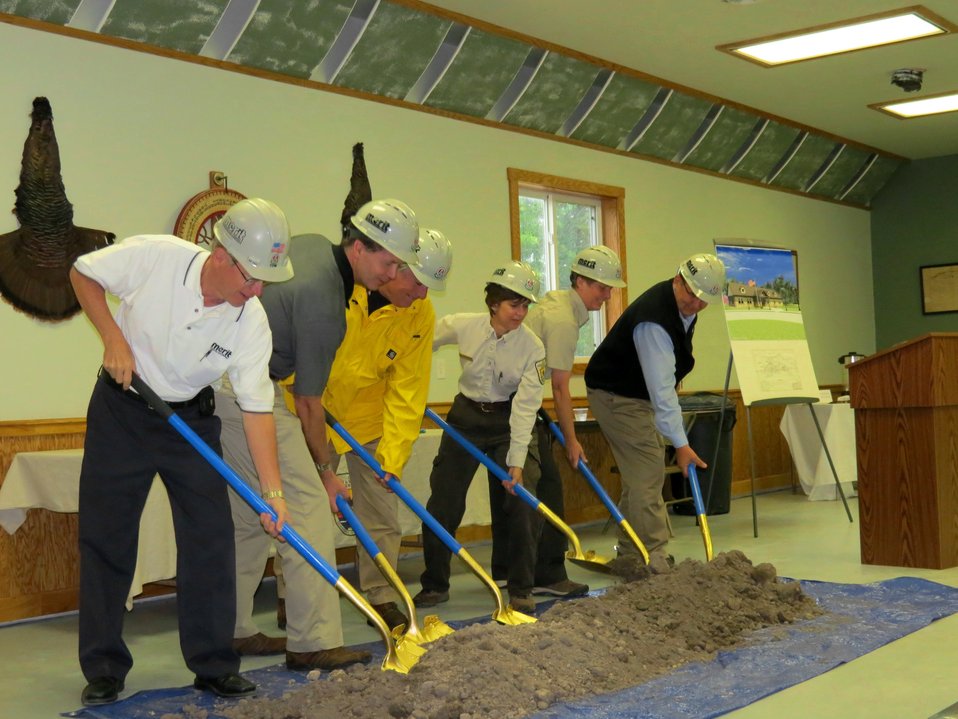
Moving Dirt

Midwest Region Chief of Refuges Rick Schultz, Refuge Manager Cathy Henry, refuge staff, Friends of Port Louisa NWR and contractors ceremonially 'break' ground.